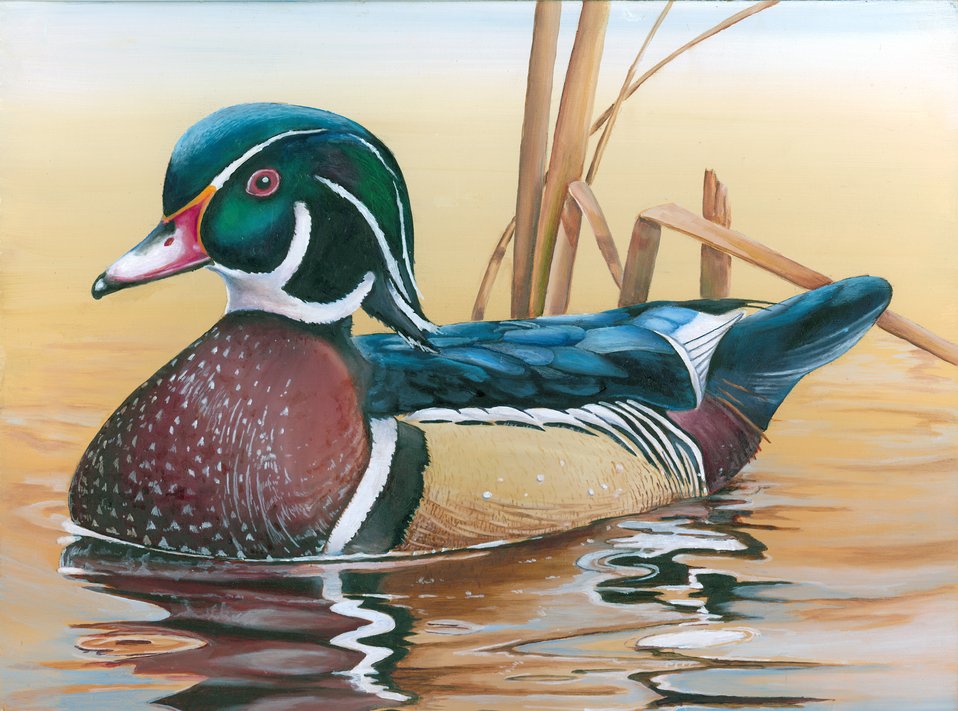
12Montana

2012 Junior Duck Stamp Best of Show from Montana